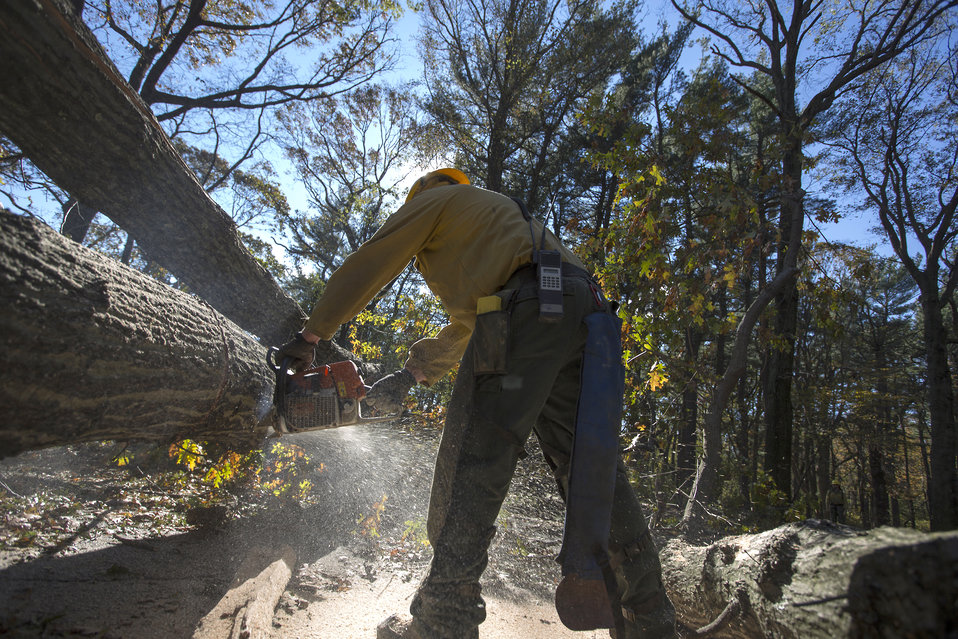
A U.S. Forest Service (USFS) team member saws downed trees in Forest Park, Queens, and NY on Nov. 4, 2012. New York City officials requested the assistance of the USFS via the Federal Emergency Management Agency (FEMA) to assist clearing the parks in order to make passage safe for local residents. Multiple USFS crews from all over the country responded following the destruction caused by Hurricane Sandy.